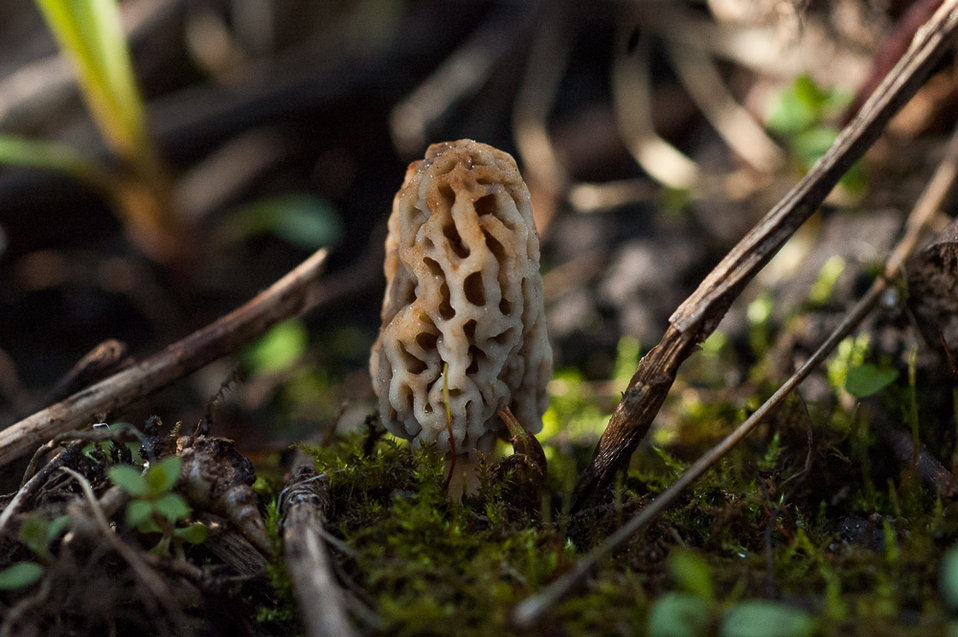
Morel

It's that time of year! Get out in the woods and find some yummy Morel Mushrooms.